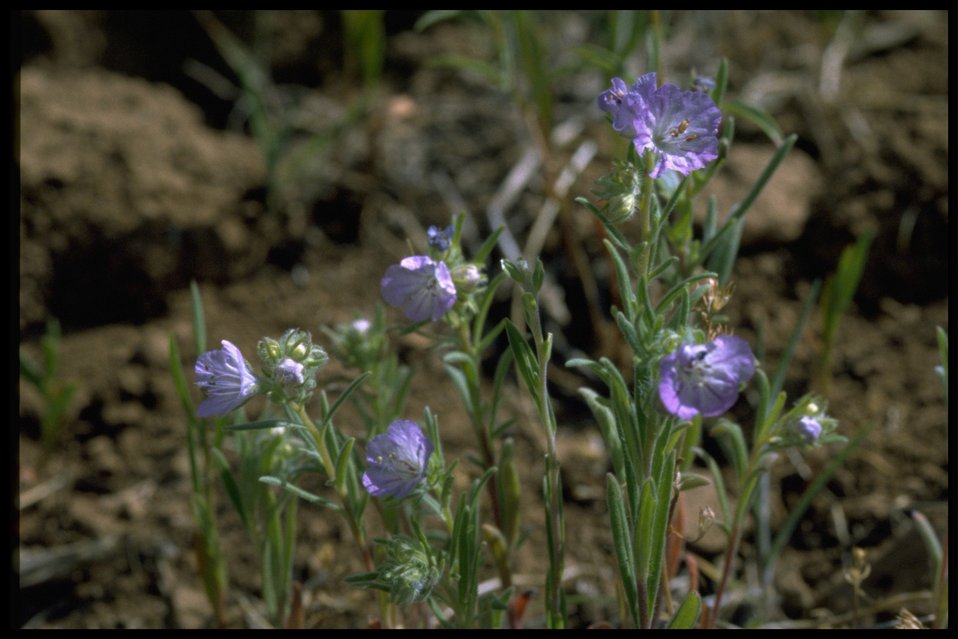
Medium shot of Linear-leaf Phacelia wildflowers.